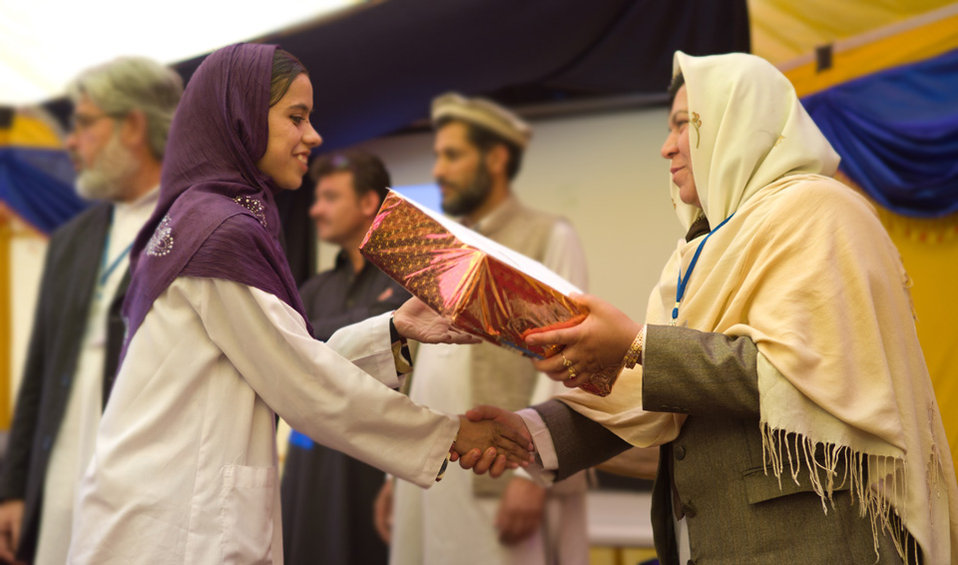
Graduation gift presentation